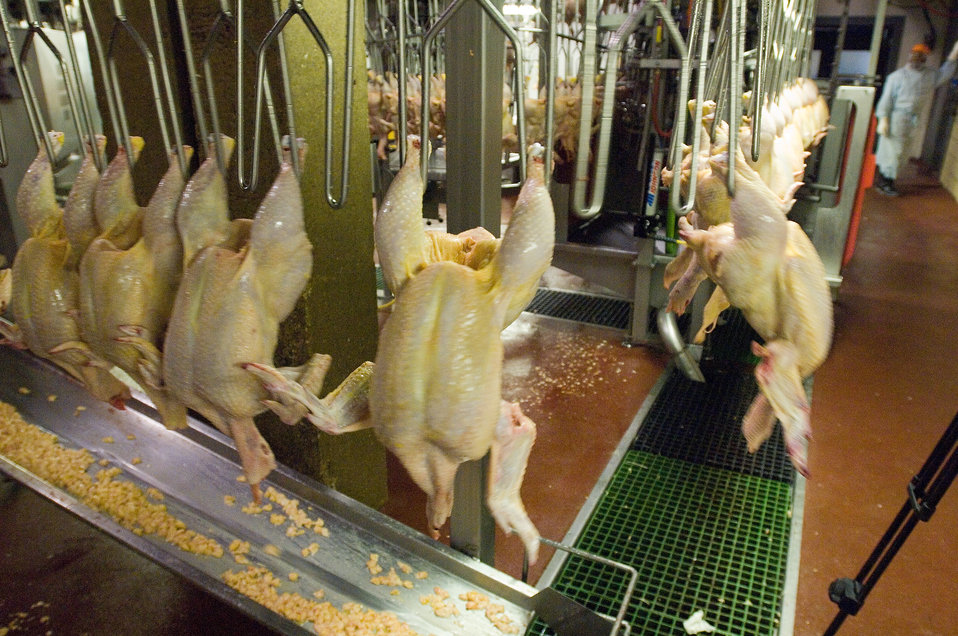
U.S. Department of Agriculture (USDA), Food Safety Inspection Service (FSIS) inspector at a poultry processing facility in Accomac, Virginia checking for cleanliness and testing poultry for the avian influenza (AI) virus.